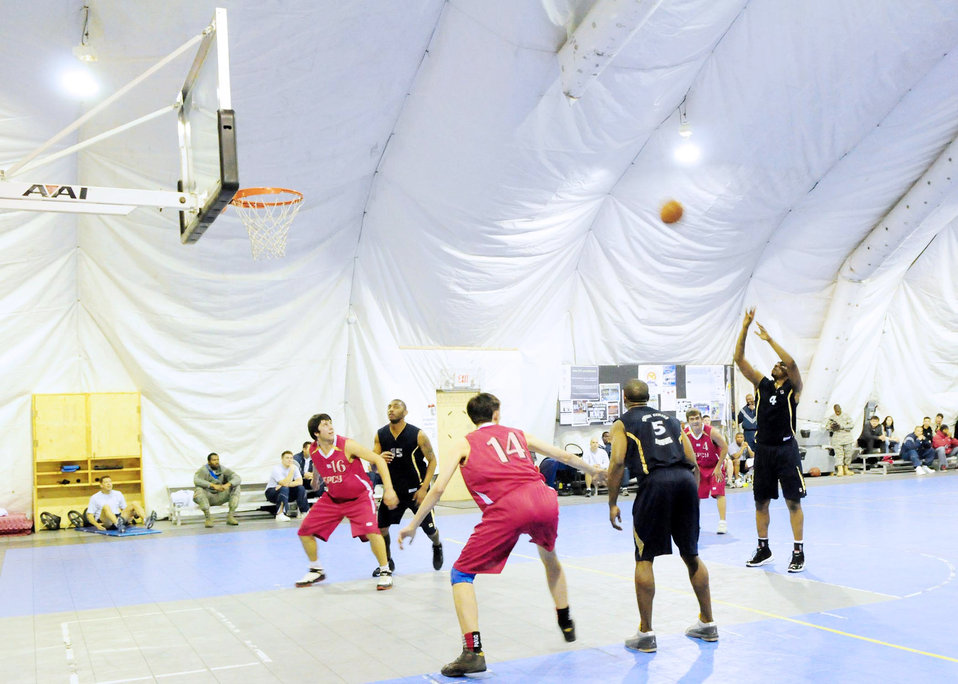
Transit Center Airmen compete against Kyrgyz in basketball game

Edward Moore shoots a free throw during a basketball game Jan. 5, 2010, at the Transit Center at Manas. The Transit Center team defeated students from the Kyrgyz Russian Slavic University, 93-51. Moore is a center on the Transit Center at Manas basketball team. Moore is a civilian land mobile radio technician with the 376th Expeditionary Communications Squadron.